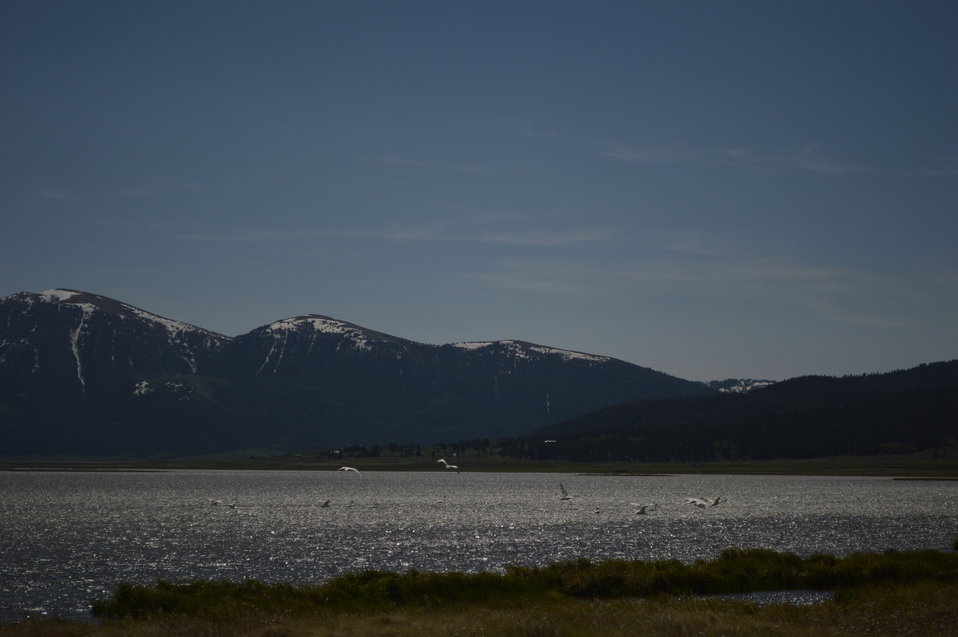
Regional Leadership Visit to Montana 2014